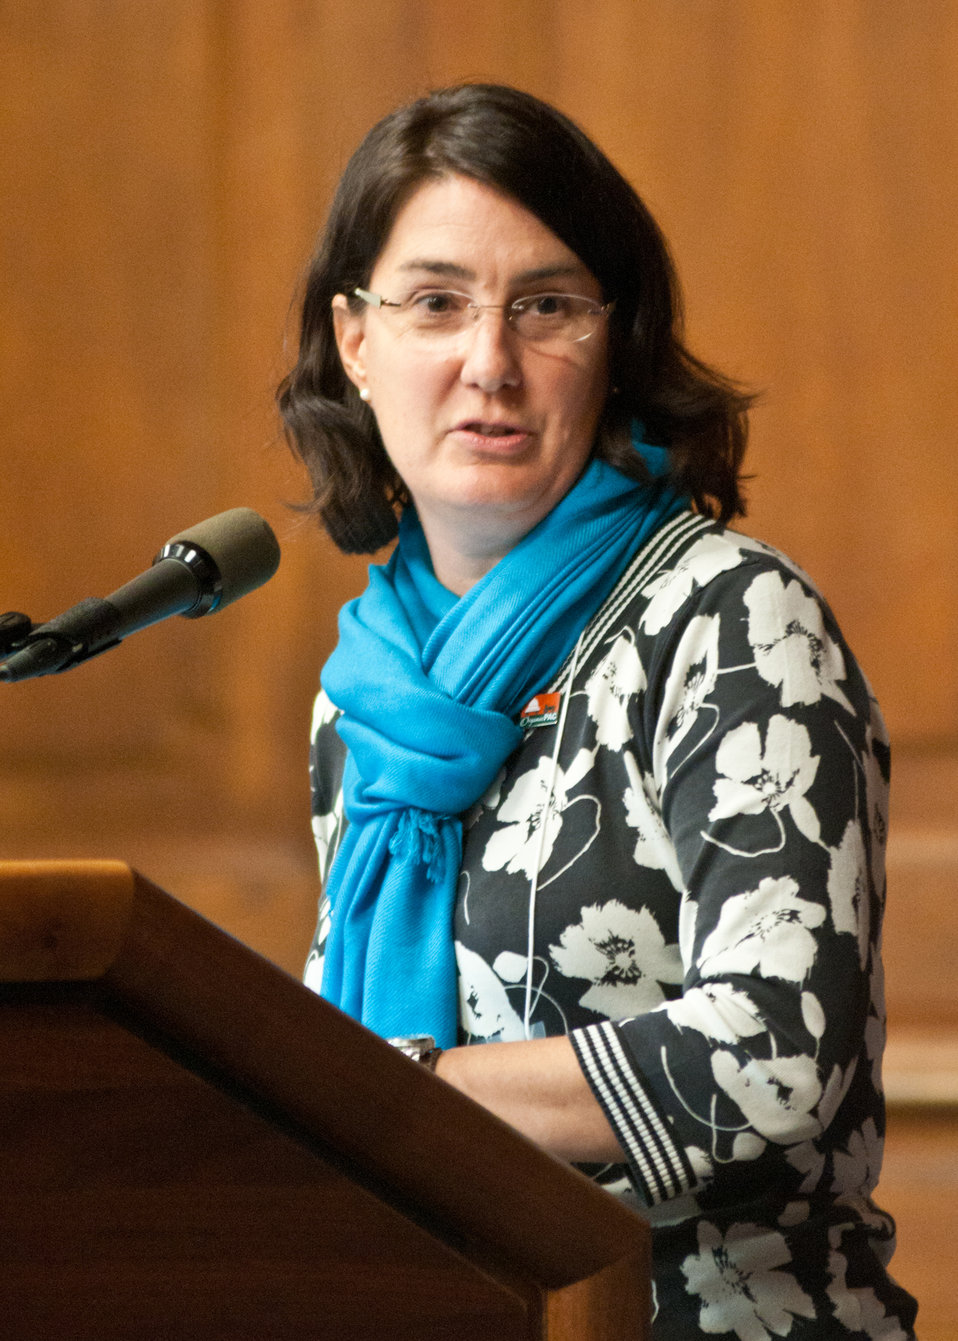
Laura Batcha, Vice President of the Organic Trade Association addresses a panel of U.S. Department of Agriculture officials during the USDA Activities and Priorities Related to Organic Agriculture and Markets Public Listening Session held at the U.S. Department of Agriculture, in Washington DC, Tuesday, September 20, 2011. The purpose of the event was to gain the perspective of stakeholders and members of the public, important tools to help USDA Programs examine and prioritize their activities and objectives in order to best serve the organic community.